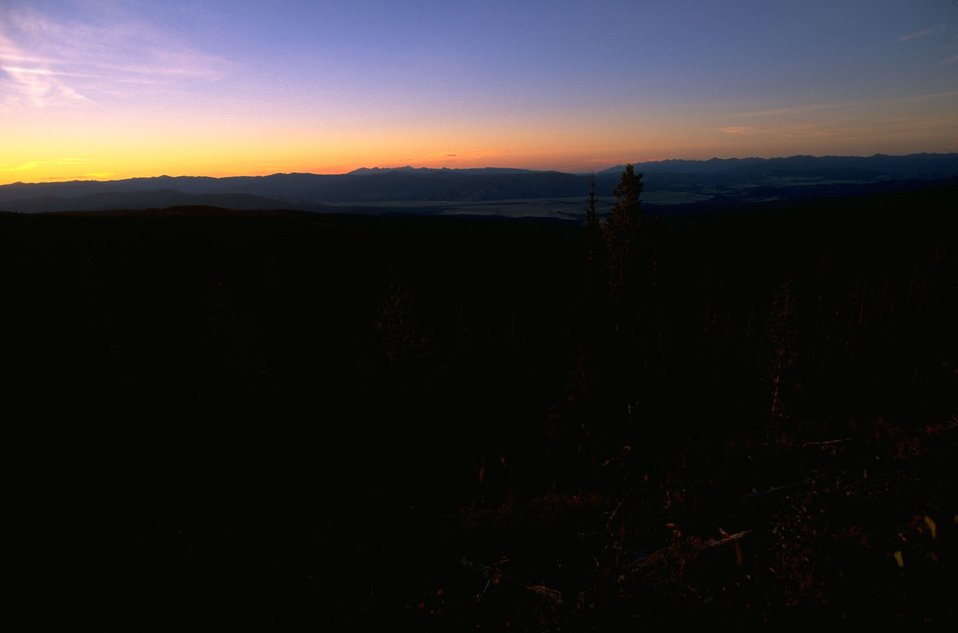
Garnet Back Country Byway -- view at sunrise